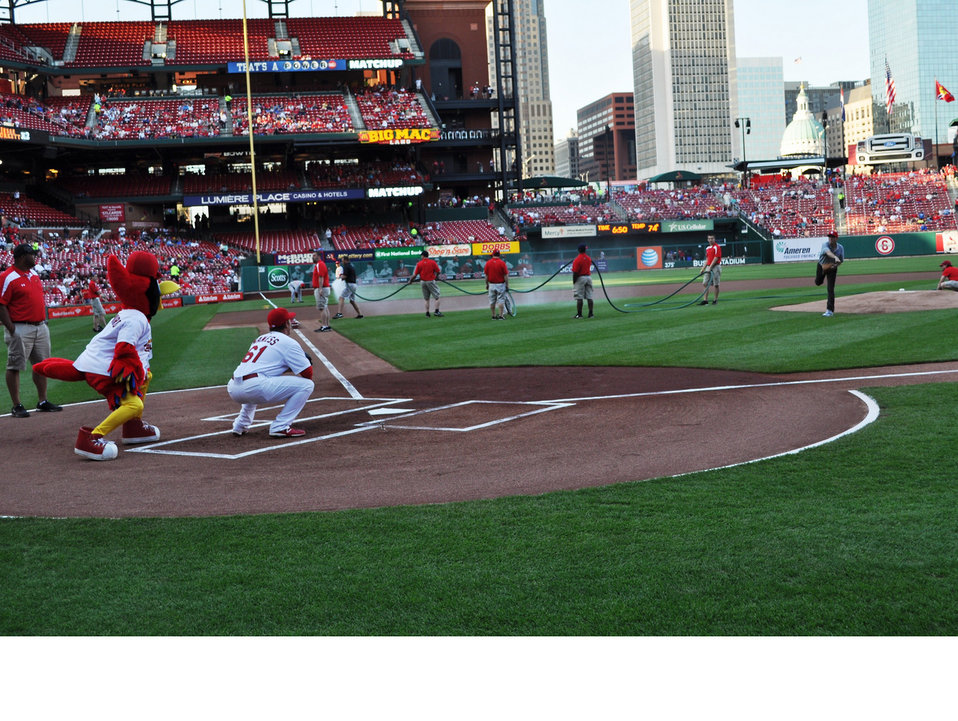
April 29, 2013 - A Pitch for Food Waste

April 29, 2013 - EPA Region 7 Administrator, Karl Brooks, takes the first pitch at Busch Stadium in St. Louis.

The Cardinals and their organization’s concessionaire, Delaware North Companies, have diverted more than 27 tons of unused food from concession stands in Busch Stadium to Operation Food Search to feed the area’s poor and hungry.

They are members of EPA’s Food Recovery Challenge, which encourages organizations to find better alternatives to throwing food away. It helps organizations learn to practice leaner purchasing and divert surplus food away from landfills to hunger-relief organizations and onto the tables of those in need in the community. It also diverts suitable food scraps to composting or animal feed.